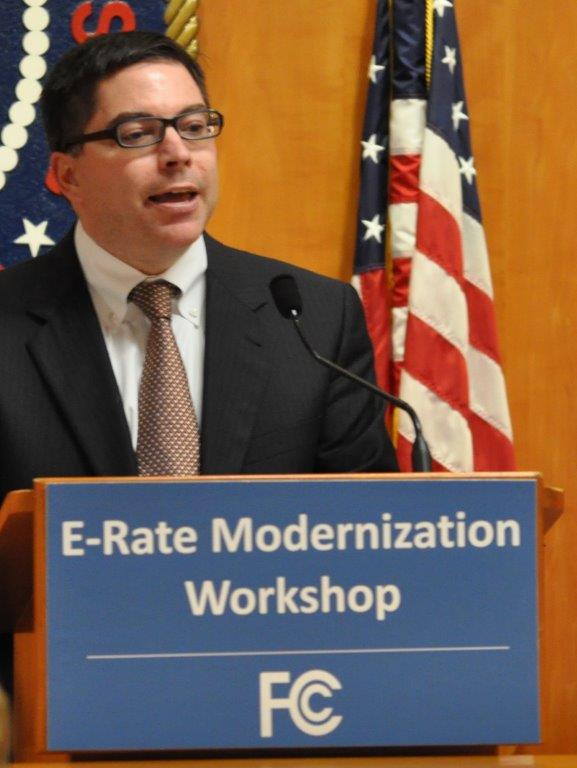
5.6.2014 E-Rate Modernization Workshop

Commissioner O'Rielly speaking at the E-Rate Modernization Workshop, 5/6/14